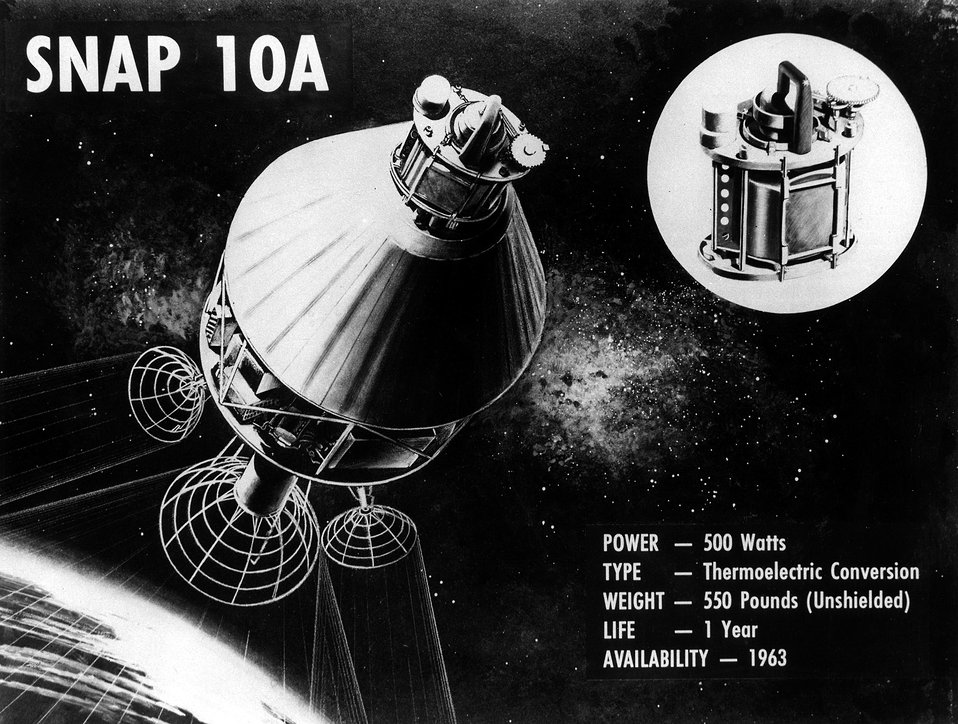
Drawing shows the SNAP 10A unit.